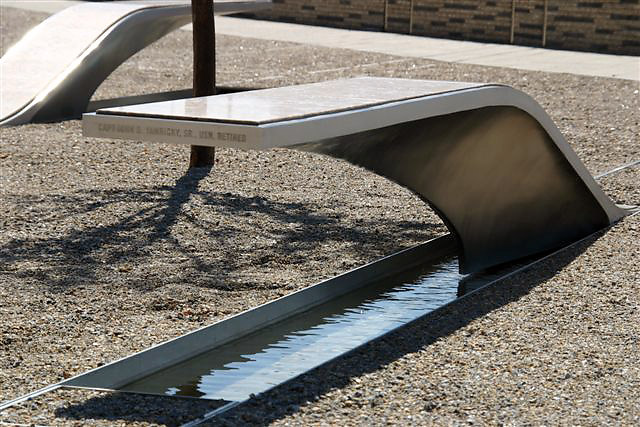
Airman's father honored at Pentagon Memorial

The memorial for John Yamnicky and the other 183 people killed on board American Airlines Flight 77 that hit the Pentagon Sept. 11, 2001, is shown. Mr. Yamnicky is the father of Master Sgt. Jennifer Yamnicky, an Air National Guardsman stationed at Andrews Air Force Base, Md.